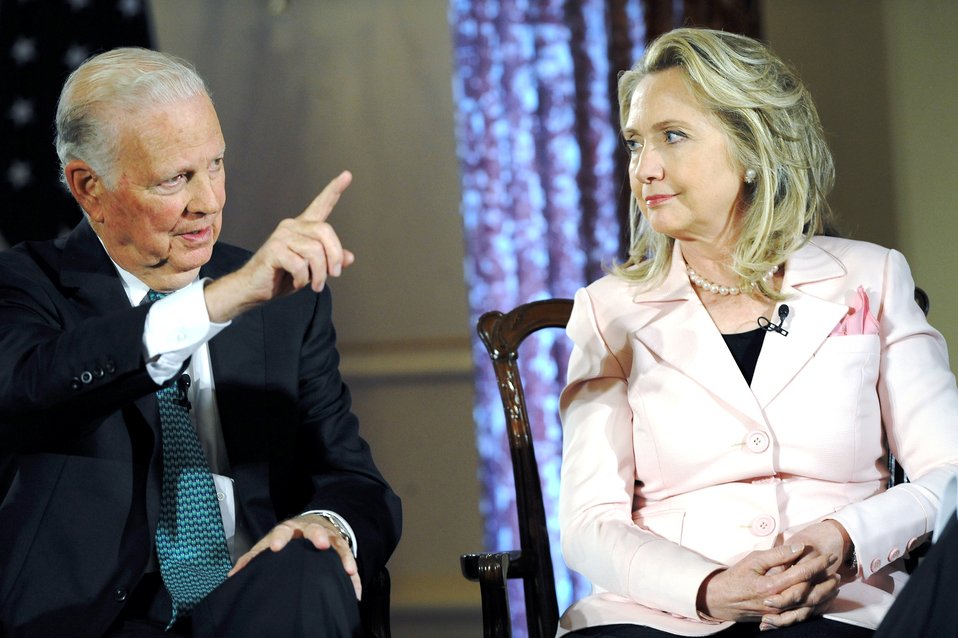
Secretary Clinton and Former Secretary Baker With Charlie Rose

U.S. Secretary of State Hillary Rodham Clinton and Former U.S. Secretary of State James A. Baker, III participate in a “Conversation on Diplomacy, Moderated by Charlie Rose” at the U.S. Department of State in Washington, D.C., on June 20, 2012.